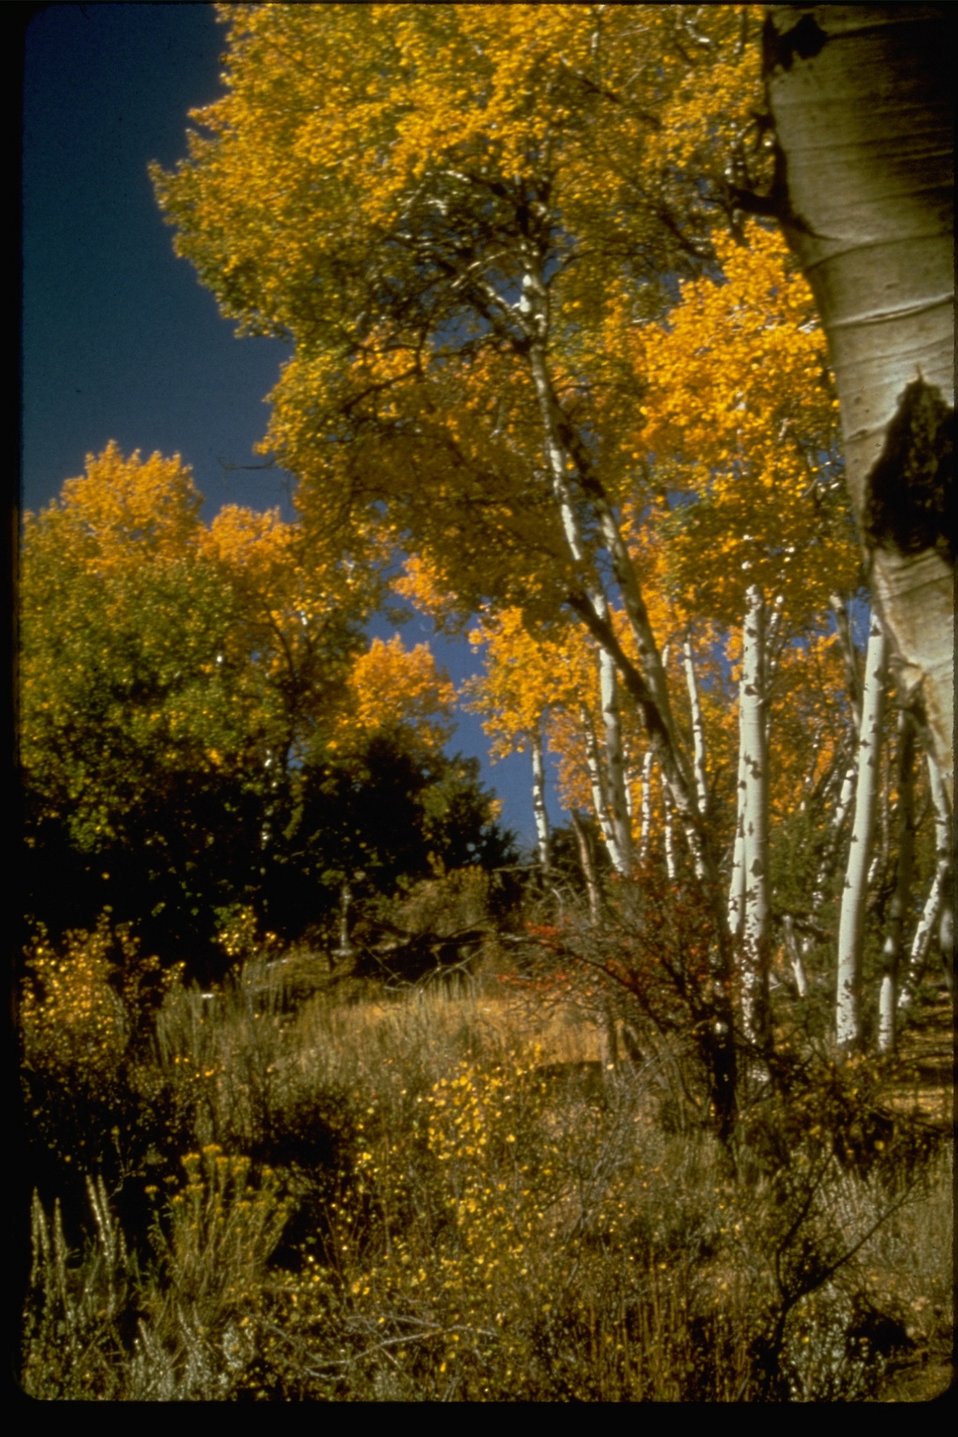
Fall colors on the trees in Oregon Canyon. WSA OR 3-157.